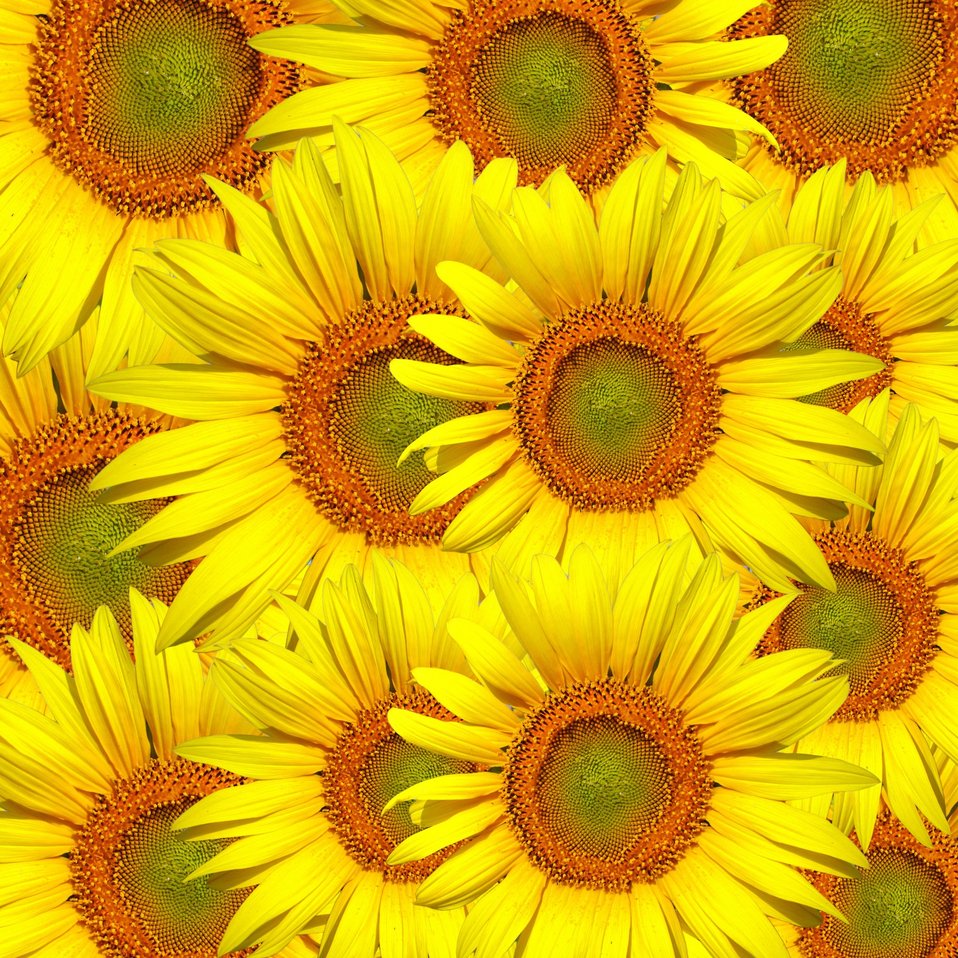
Sunflowers background wallpaper pattern.